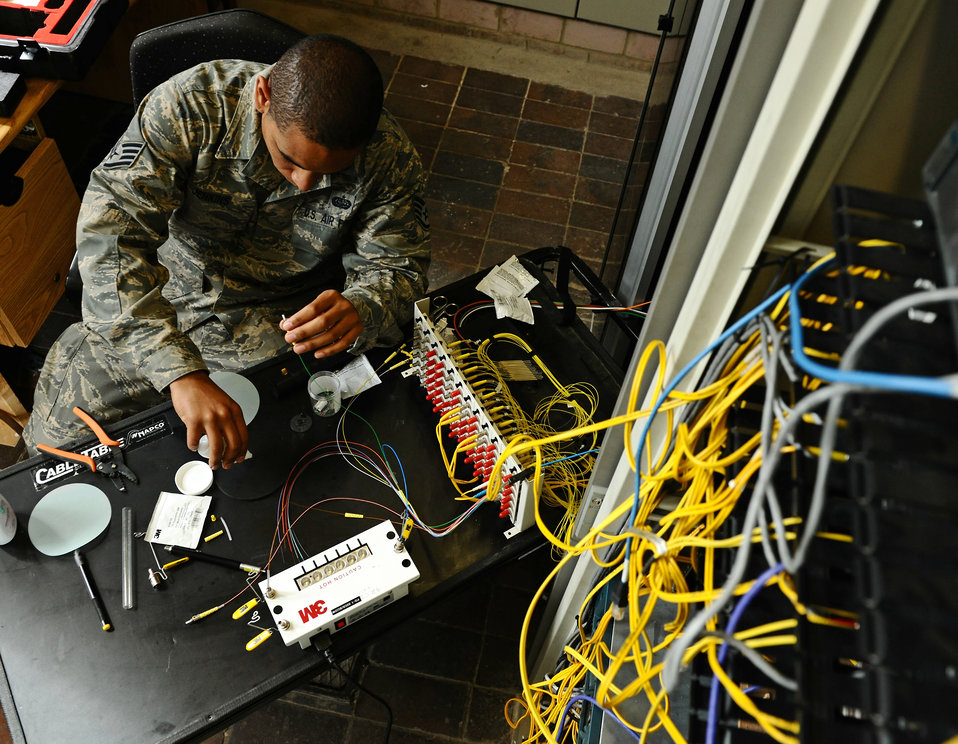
Fixing fiber

Staff Sgt. Aaron Jenkins prepares to polish the ends of an optical fiber cable outside Bitburg Annex, Germany, Aug. 11, 2011. The 52nd Communications Squadron from Spangdahlem Air Base, Germany, worked with local contractors to repair a damaged optical fiber line outside of the annex, which affected its defense switch network telephone lines. Jenkins is a cable maintenance technician with the 52nd CS.